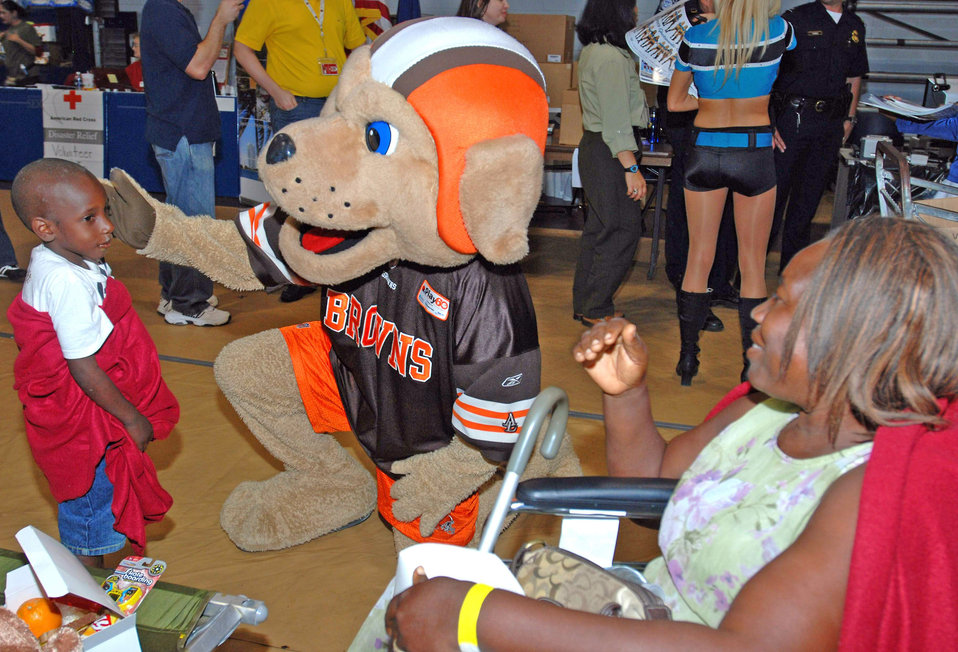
NFL Pro Bowl cheerleaders boost morale for Operation Unified Response workers

Viergela Pierre watches as the Cleveland Browns' mascot plays with her grandson, Jacquese Zomarien Jayden Nazaire, Jan. 27, 2010, at Homestead Air Reserve Base, Fla. Mrs. Pierre and her grandson are among more than 3,000 evacuees who've processed through Homestead ARB following the Jan. 12, 2010, earthquake that devastated Haiti. National Football League representatives visited military members, civilians and earthquake victims at Homestead ARB to lighten the gravity of ongoing relief efforts.